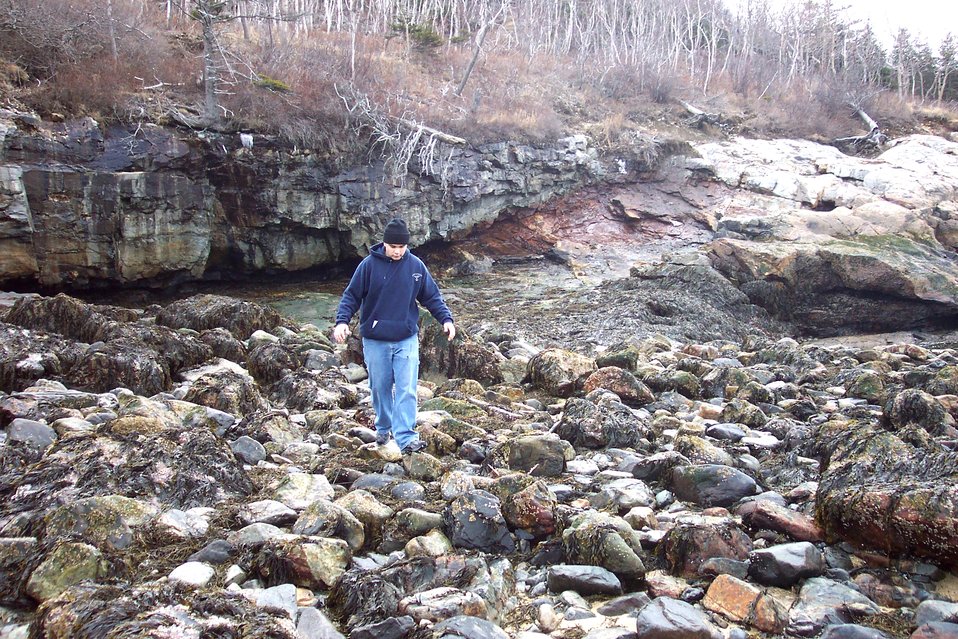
Tide-pooling and rock hopping on the eastern side of Sand Beach.